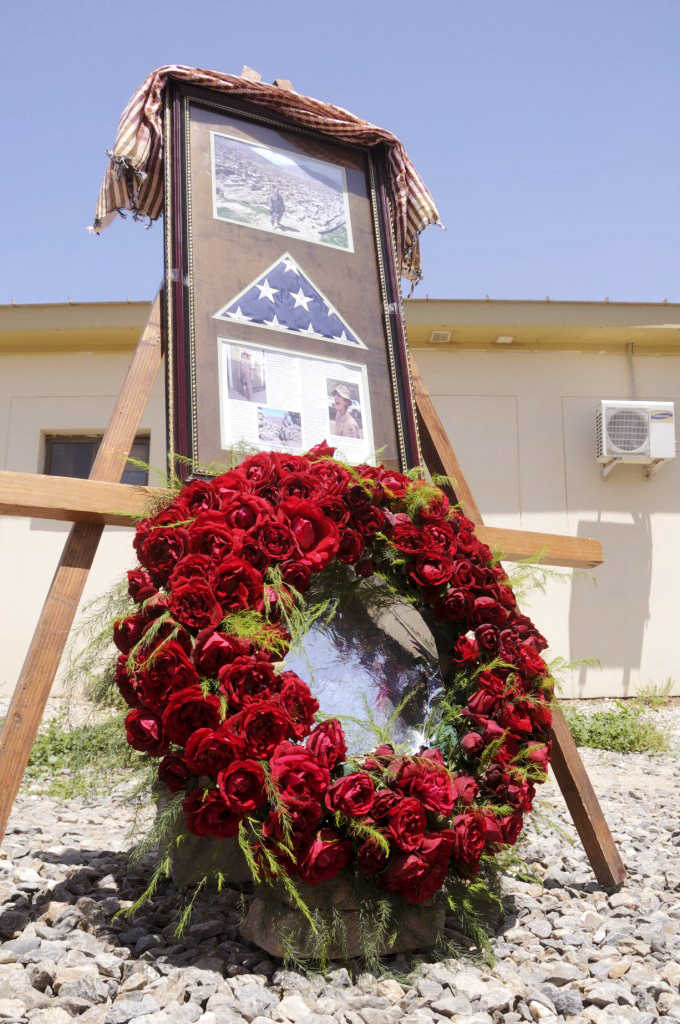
Airmen honor the fallen

A memorial to 1st Lt. Roslyn Schulte stands on display during a ceremony May 20, 2010 in Kabul, Afghanistan. Lieutenant Schulte was a 2006 graduate of the U.S. Air Force Academy in Colorado Springs, Colo.